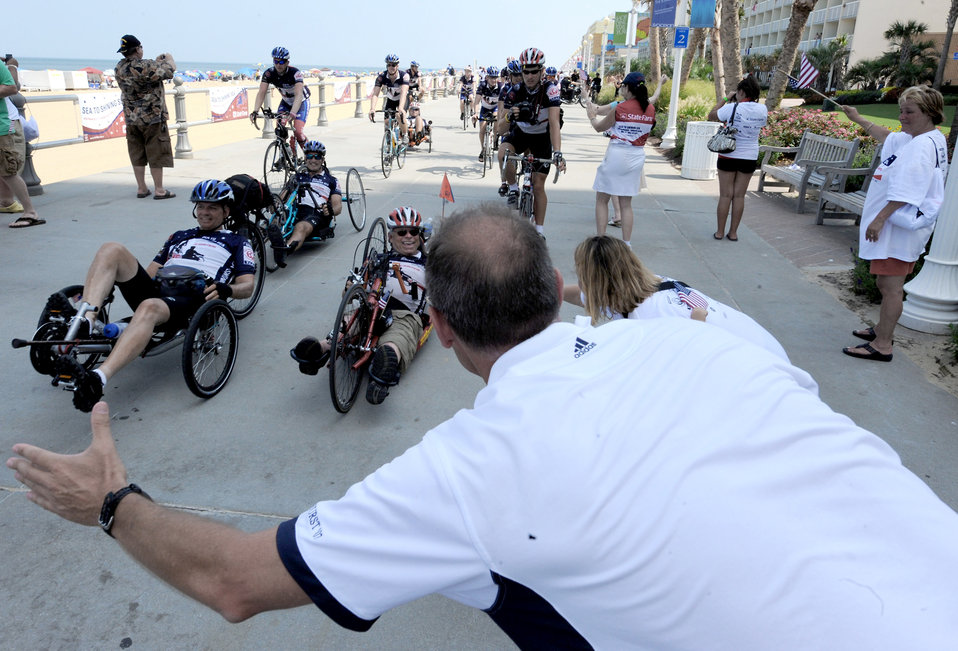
Sea to Shining Sea riders arrive July 24, 2010, in Virginia Beach, Va., to a crowd of family members and local supporters. Sea to Shining Sea is a 4,000-mile bike ride that started at the Golden Gate Bridge in San Francisco, and ended in Virginia Beach.